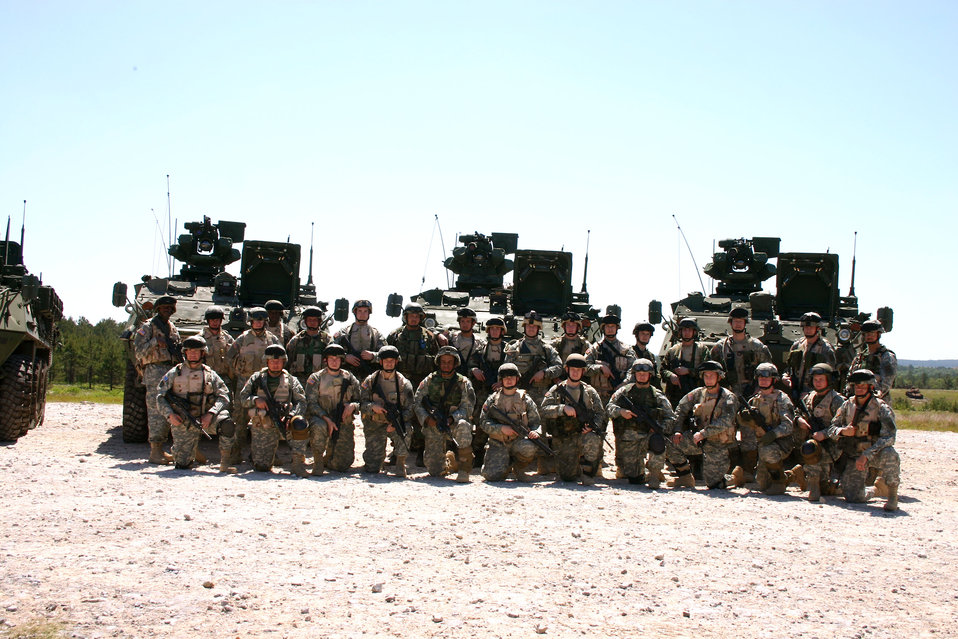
Army hands over Strykers to Air Force

FORT POLK, La. -- Airmen from the 3rd Air Support Operations Squadron stand in front of the Stryker armored vehicle added to the Air Force inventory during a May 5 ceremony at Fort Polk, La., where Airmen will train with the Stryker alongside Soldiers from the 172nd Stryker Brigade Combat Team in preparation for an upcoming deployment to Southwest Asia.